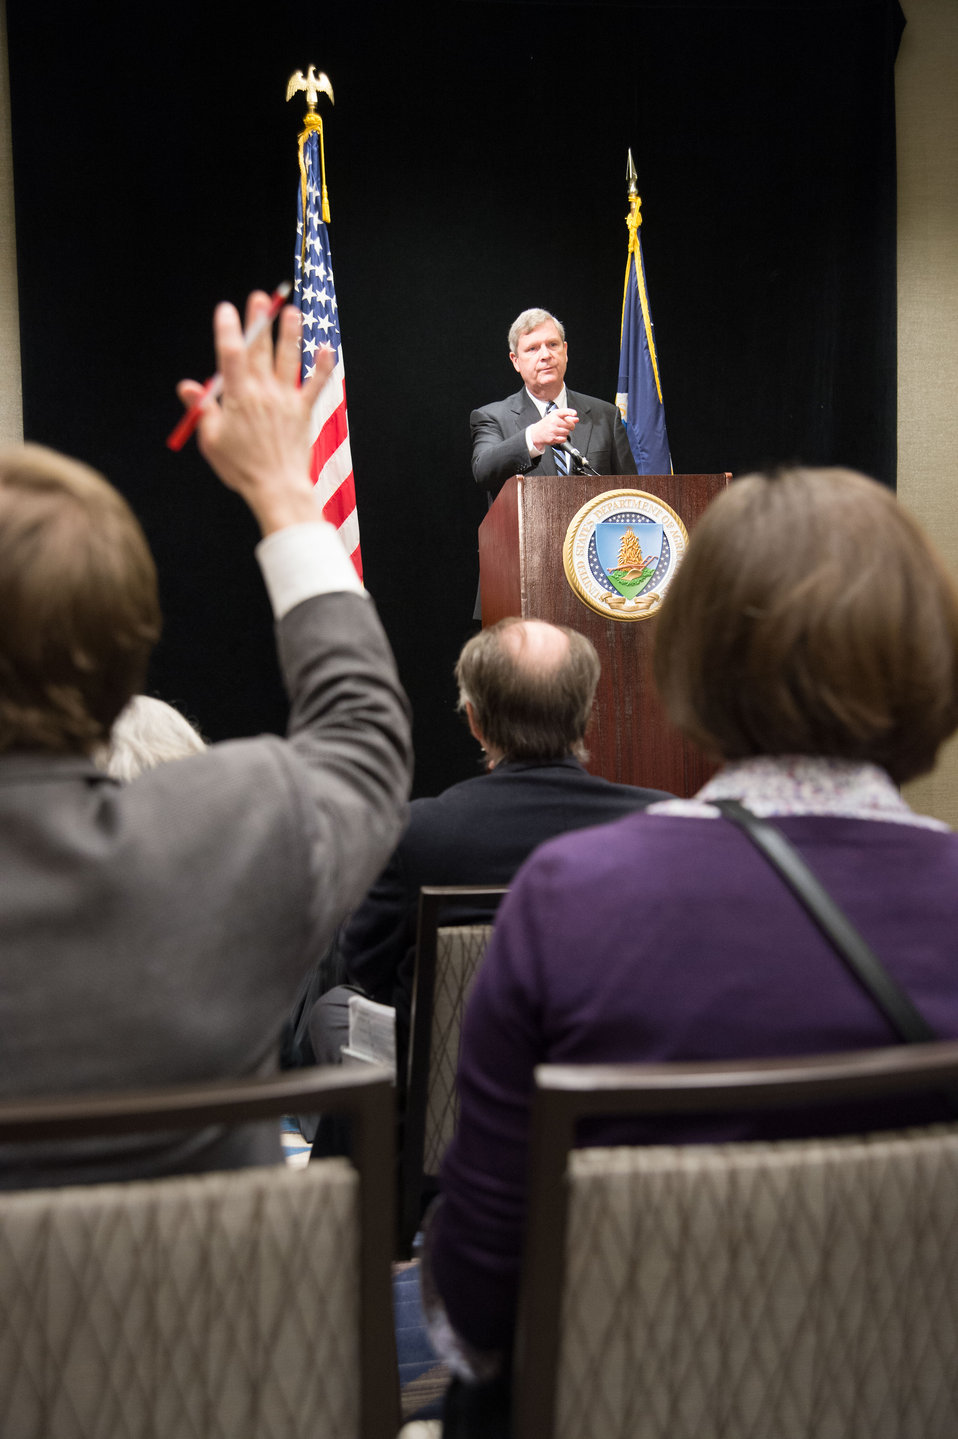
Agriculture Secretary Tom Vilsack makes remarks to the press at the 2014 Agricultural Outlook Forum on Thursday, Feb. 20, 2014 in Arlington, VA. The U.S. Department of Agriculture's (USDA) annual Agricultural Outlook Forum brings together the agricultural community to discuss policy, trade, science, rural development, and the economic outlook for the coming year. The Forum also focuses on forestry, health and nutrition issues, and the changing dynamics and face of rural America.